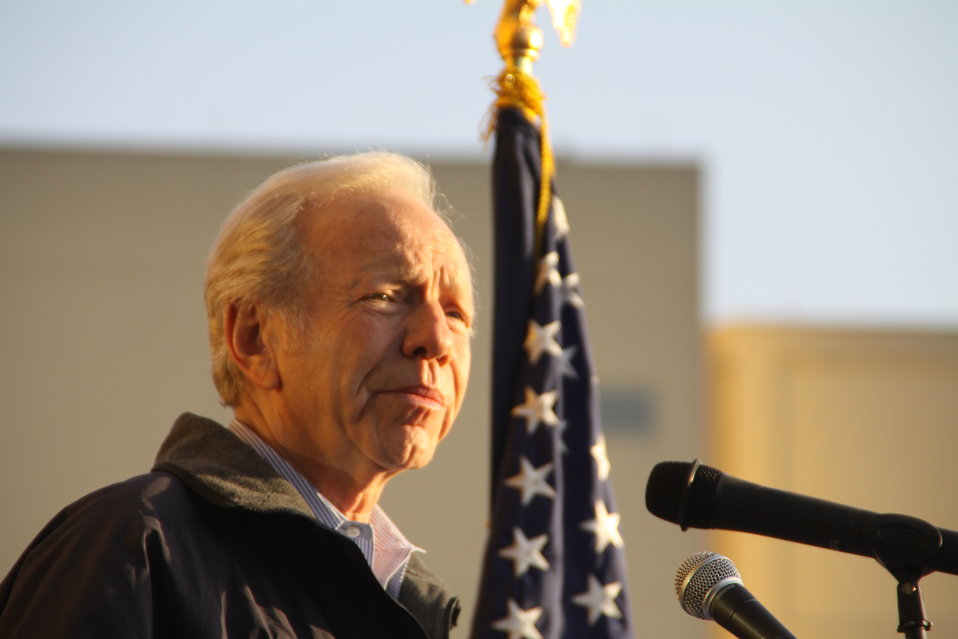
Senator Lieberman